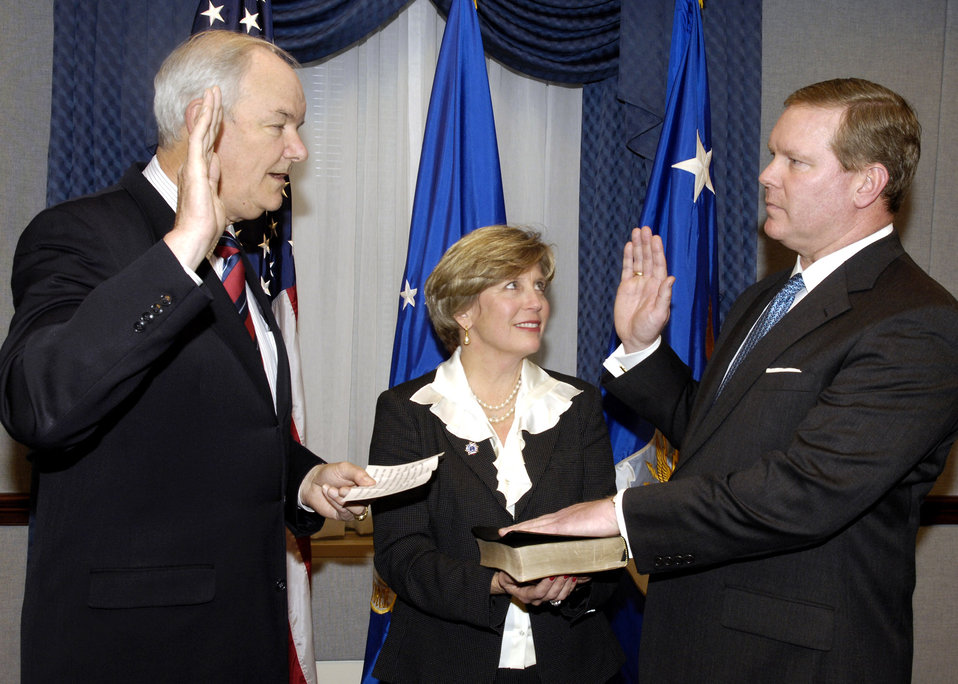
New financial management assistant secretary sworn in

Secretary of the Air Force Michael W. Wynne swears in John H. Gibson as the Air Force's new assistant secretary of the Air Force for Financial Management and Comptroller in a ceremony at the Pentagon Jan. 15, as Mr. Gibson's wife, Lori, looks on.